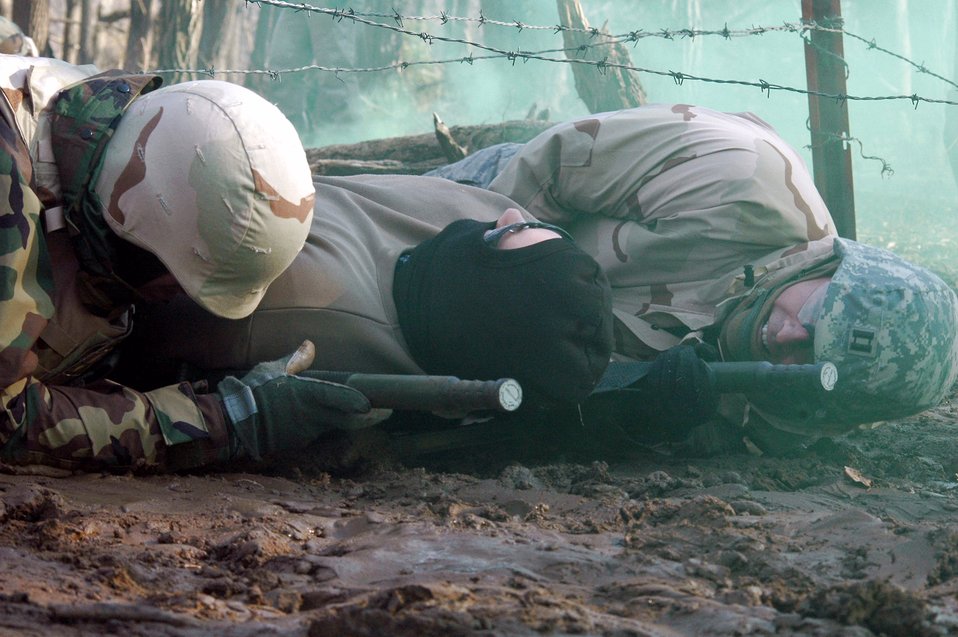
Airmen complete first Air Advisor Course

Students go through the combat first aid obstacle course Feb. 29 on a range on Fort Dix, N.J. Taught by Expeditionary Operations School officials, Air Force Expeditionary Center's Air Advisor Course 08-1 prepares Airmen deploying to Afghanistan and Iraq who will in turn be training military forces in those countries.